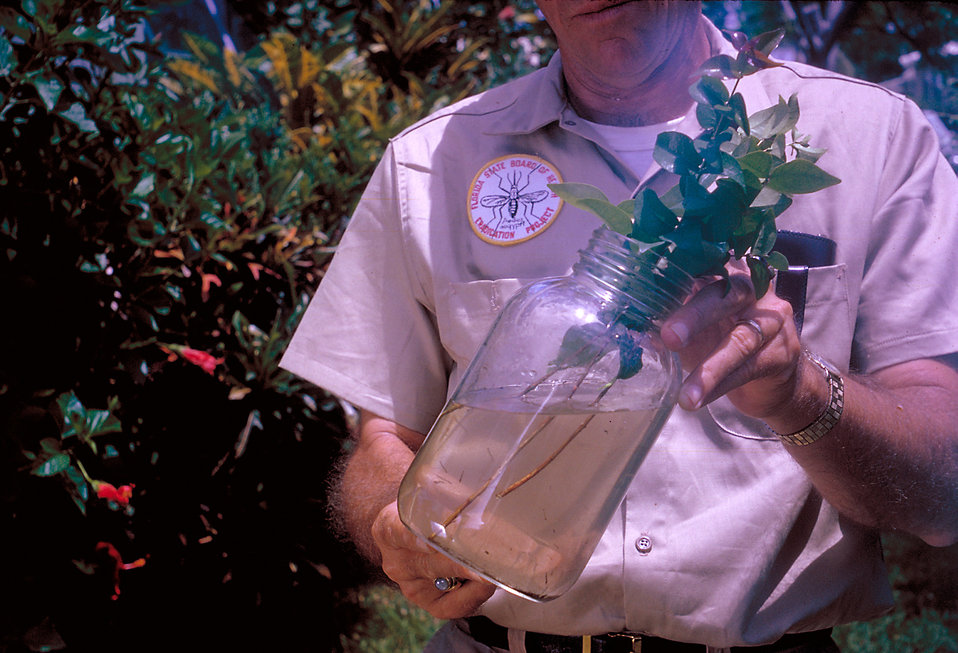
Worker holding jar containing mosquito larvae, Miami, Florida. Parasite.